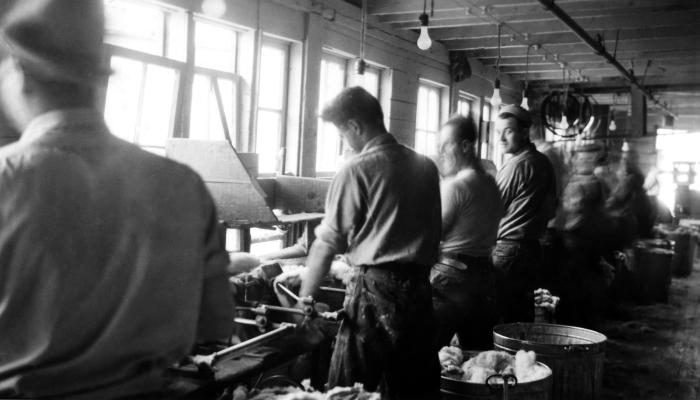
This historical image was provided by the Center for Disease Control's (CDC), National Institute for Occupational Safety and Health (NIOSH). The photograph depicted an assembly line of Connecticut fur processing workers in the process of trimming the fur on unidentified animal pelts. Note that the men were not wearing any protective accessories such as gloves, filtered breathing masks, or protective eyewear. However, it cannot be determined from this image, whether or not these protective items would have been necessary, based on the levels of possibly hazardous chemicals, pathogens, or even noise levels.